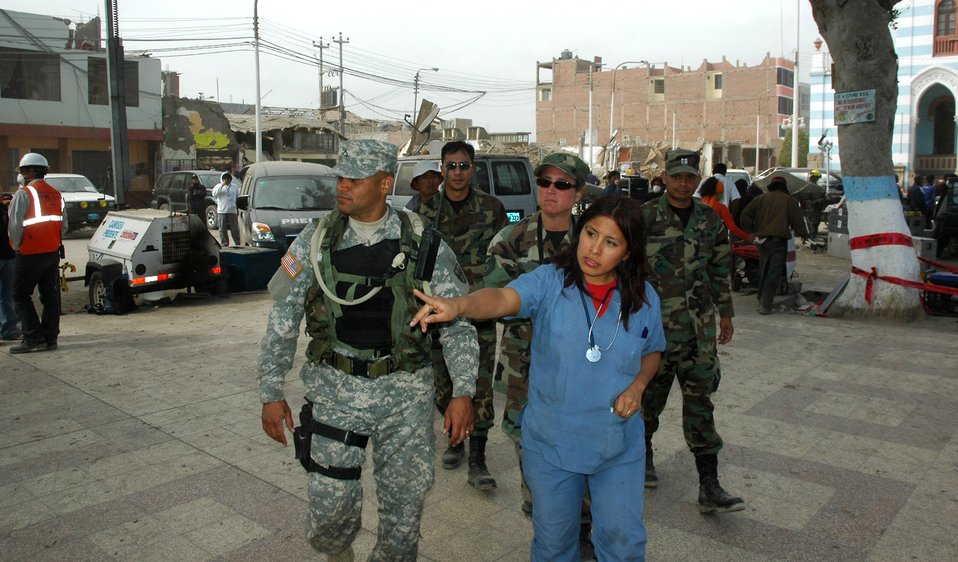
Task force treats more than 500 Peruvian patients

Army Private 1st Class David Torres gets information Aug. 19 on the town of Pisco, Peru, from local paramedic Maricarmen Perez during Joint Task Force-Bravo's medical humanitarian mission. Members of JTF-Bravo at Soto Cano Air Base, Honduras, traveled to Peru to assist in relief following the 8.0 magnitude earthquake which struck the region Aug. 15. Private Torres is a security forces member with JTF-B.